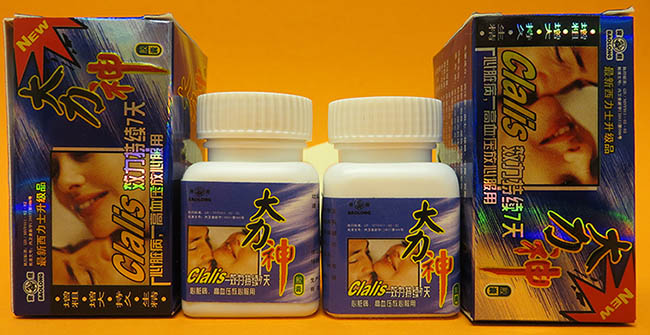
RECALLED – Dietary Supplement

July 5, 2013 – Product Recall – Hardmenstore.com Issues Voluntary Nationwide Recall of Silver Sword and Clalis at the Request of the FDA.